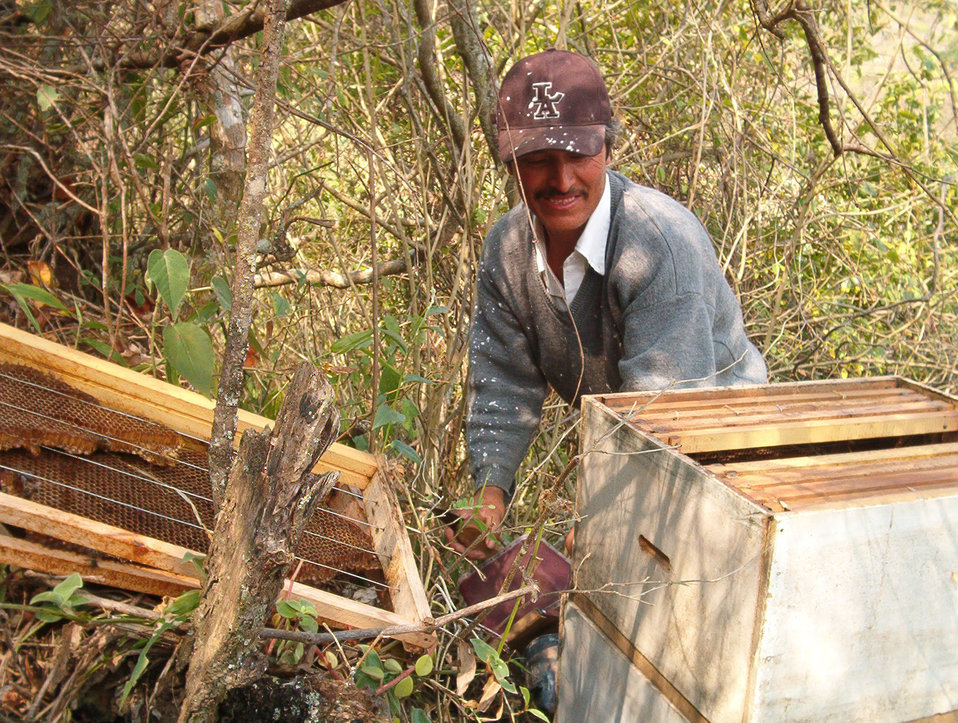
Honey production provides an alternative income source to communities that make their living by using resources from sensitive bird habitat in Bolivia. Supported by the Neotropical Migratory Bird Conservation Act.